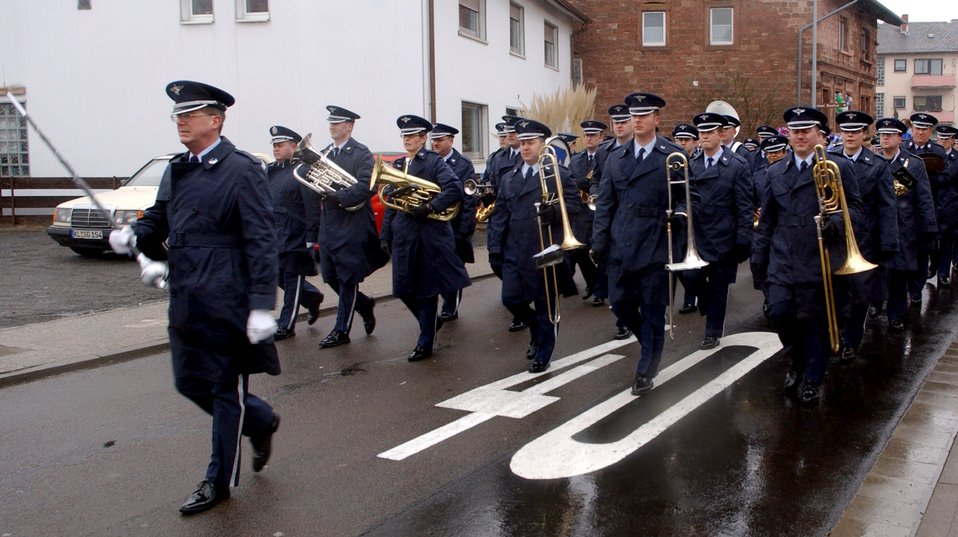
U.S. Air Forces in Europe Band members participate in the local Fasching Parade in Ramstein Village, Germany, on Tuesday, Feb. 28, 2006. The parade was initially named and reserved for the Tuesday before Ash Wednesday.